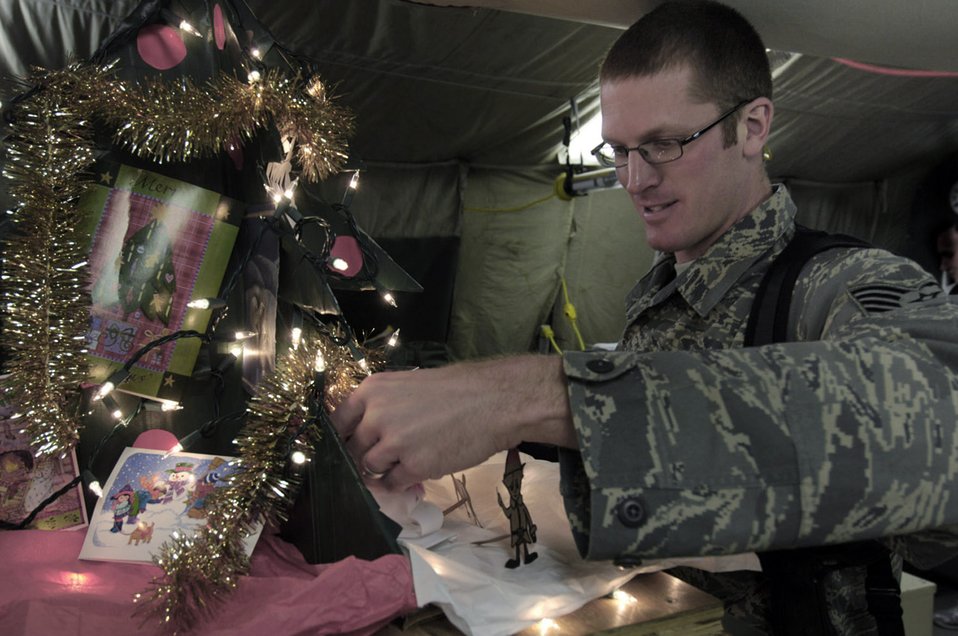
Holiday spirit in Afghanistan

Tech. Sgt. Ryan McMaster places figures for a holiday diorama next to a tree that he created with locally-procured materials Dec. 14 at Bagram Air Base, Afghanistan. Sergeant McMaster is an aircrew life support technician with the 774th Expeditionary Airlift Squadron.